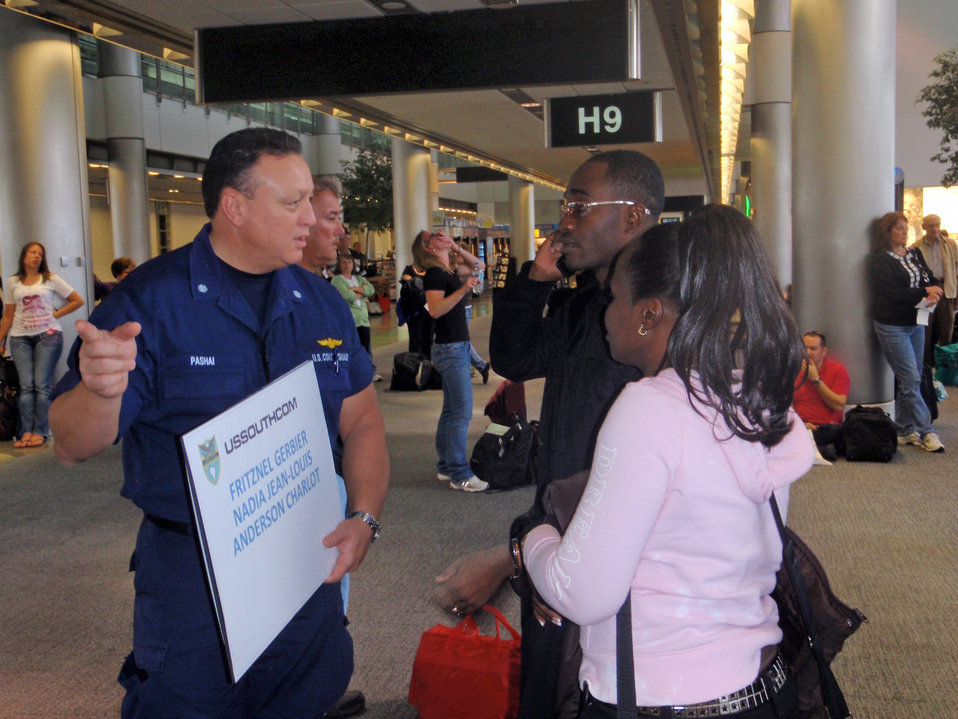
U.S. military helps Haitian students return home

Coast Guard Cmdr. Jeff Pashai greets two Haitian coast guard members Jan. 23, 2010, at the Miami International Airport. The Haitian military members are part of the International Military Exchange Training program and have spent the past six to eight months studying in the U.S. With the help of the U.S. military, seven students reunited with family members in Haiti. Commander Pashai is the U.S. Southern Command Coast Guard TCA liaison.